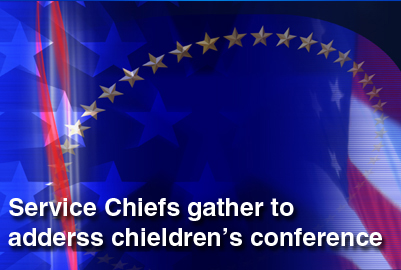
Service chiefs gather.